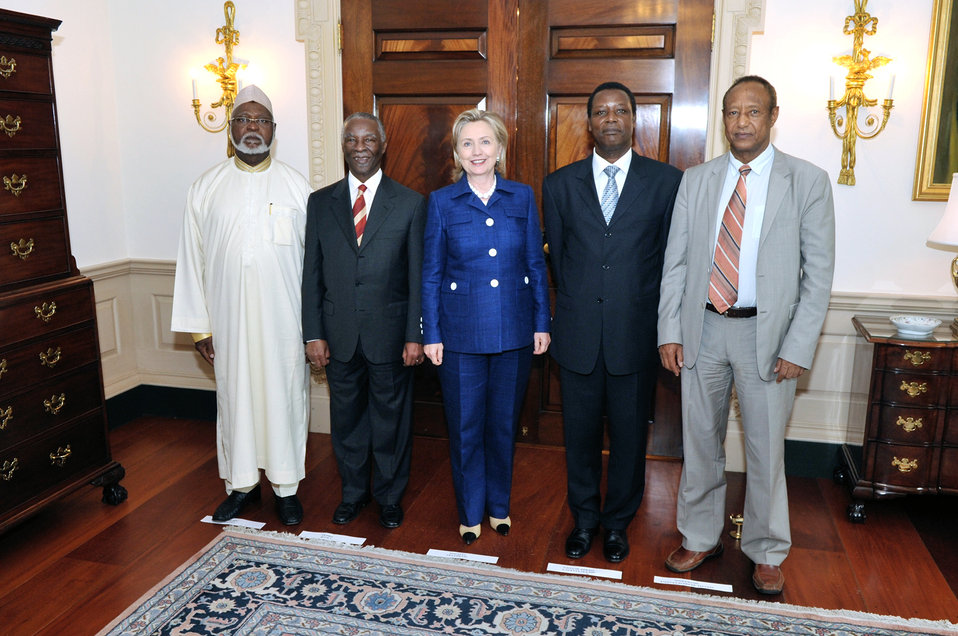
Secretary Clinton Meets With Former South African President Mbeki and UN Special Rep. for Sudan Menkerios

U.S. Secretary of State Hillary Rodham Clinton meets with former South African President Thabo Mbeki and UN Special Representative for Sudan Haile Menkerios, at the U.S. Department of State in Washington, D.C., on June 16, 2010.